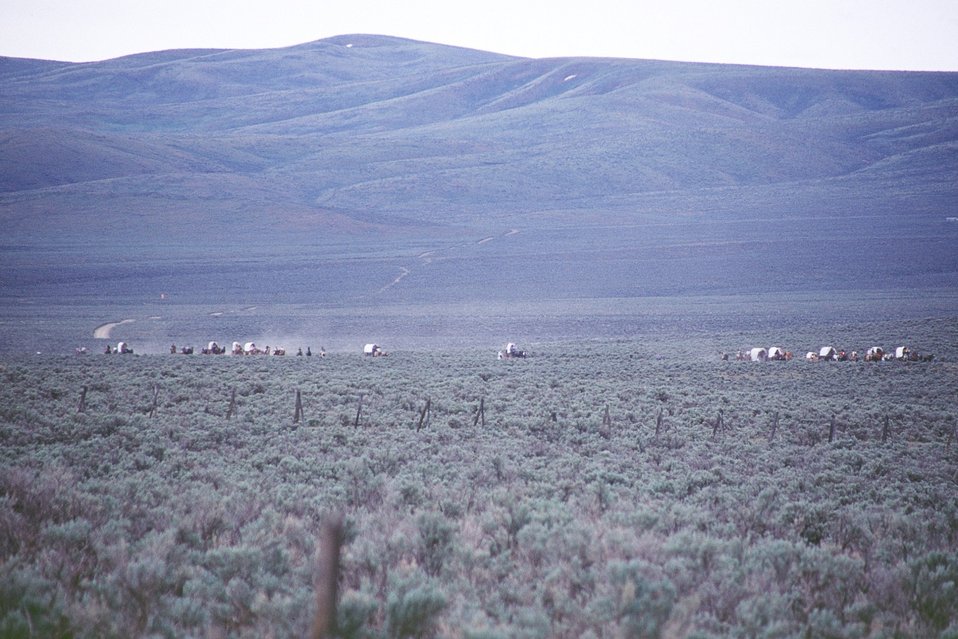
NHOTIC 10th Anniversary, wagon train reenactment. Farshot of covered wagons and pioneers on the Oregon Trail.